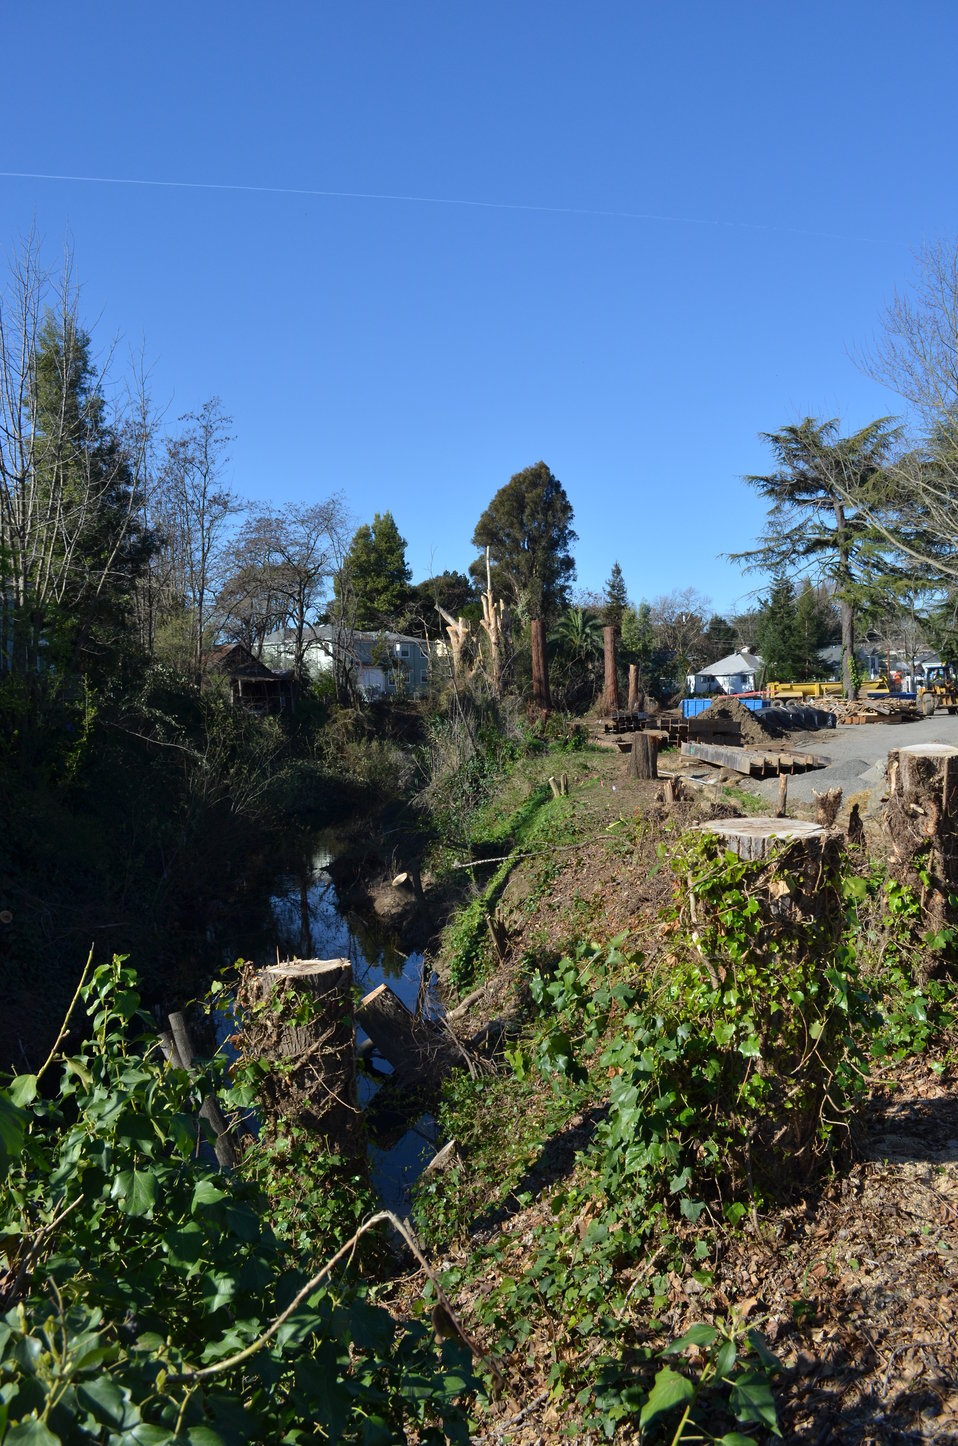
Corps provides glimpse of Napa Creek project progress

Construction crews have begun to clear trees and shrubs along the upper reach of the Napa Creek March 7, 2012, in Napa, Calif., in preparations for creek widening to occur as part of the Napa Creek project. The $14.8 million project, funded by the American Recovery and Reinvestment Act of 2009, is a joint effort of the U.S. Army Corps of Engineers Sacramento District, the city of Napa, and the Napa Flood Control and Water Conservation District to reduce the flood risk for the city. Many of the trees taken from this site will be used later in the project, when they are anchored to the bottom of the creek bed, providing shade and suitable habitat for fish.